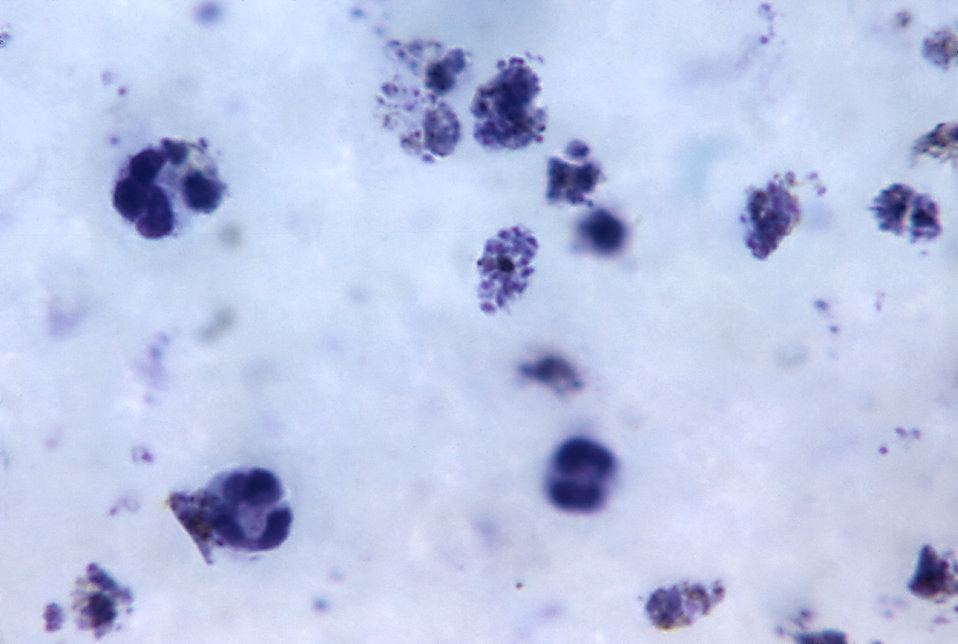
This thick film micrograph reveals a mature P. vivax schizont using Giemsa stain, but no Sch�'s dots; Mag. 1125X.